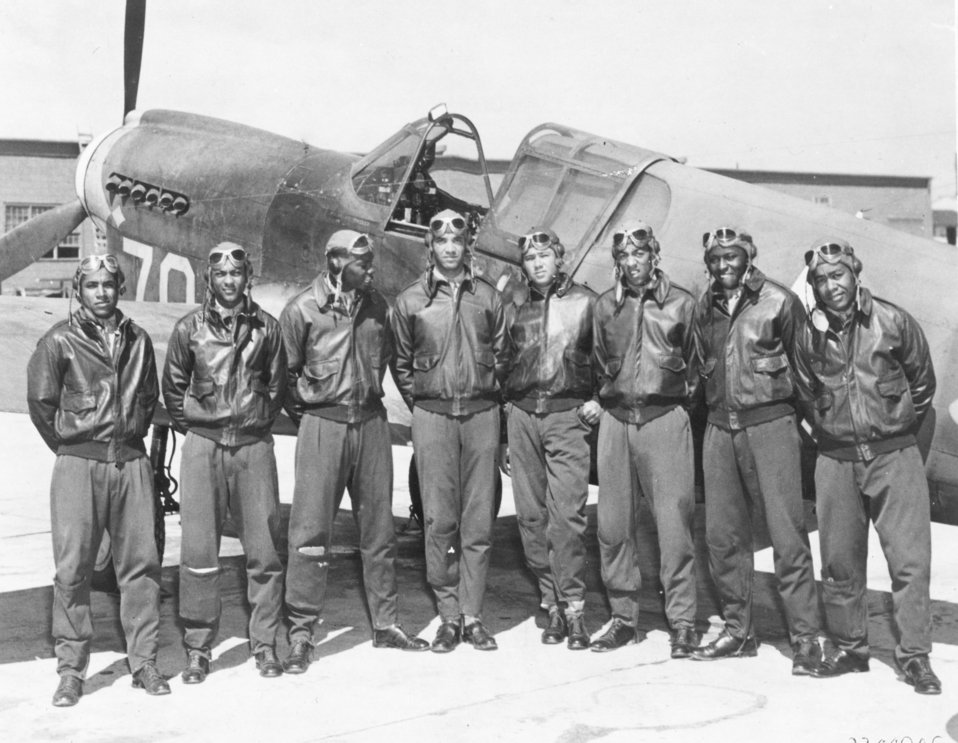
The Tuskeegee Airmen

1940's -- The Tuskeegee Airmen